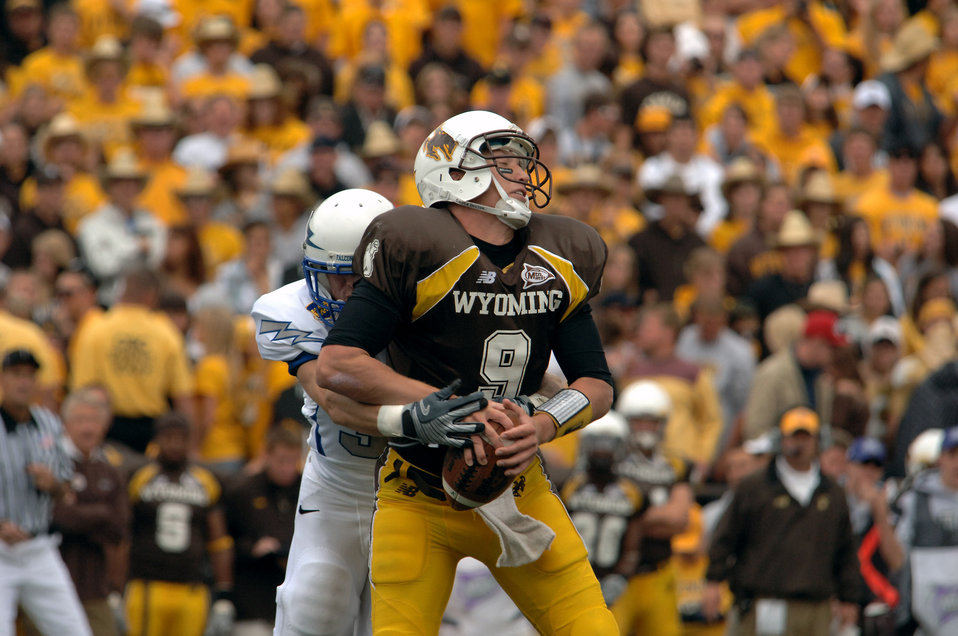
Football: Falcons defense stifles Wyoming, 23-3

U.S. Air Force Academy strong safety Chris Thomas puts Wyoming quarterback Dax Crum in a bearhug and forced Wyoming's first fumble of the game Sept. 6 in Laramie, Wyo. Thomas recorded 13 tackles.